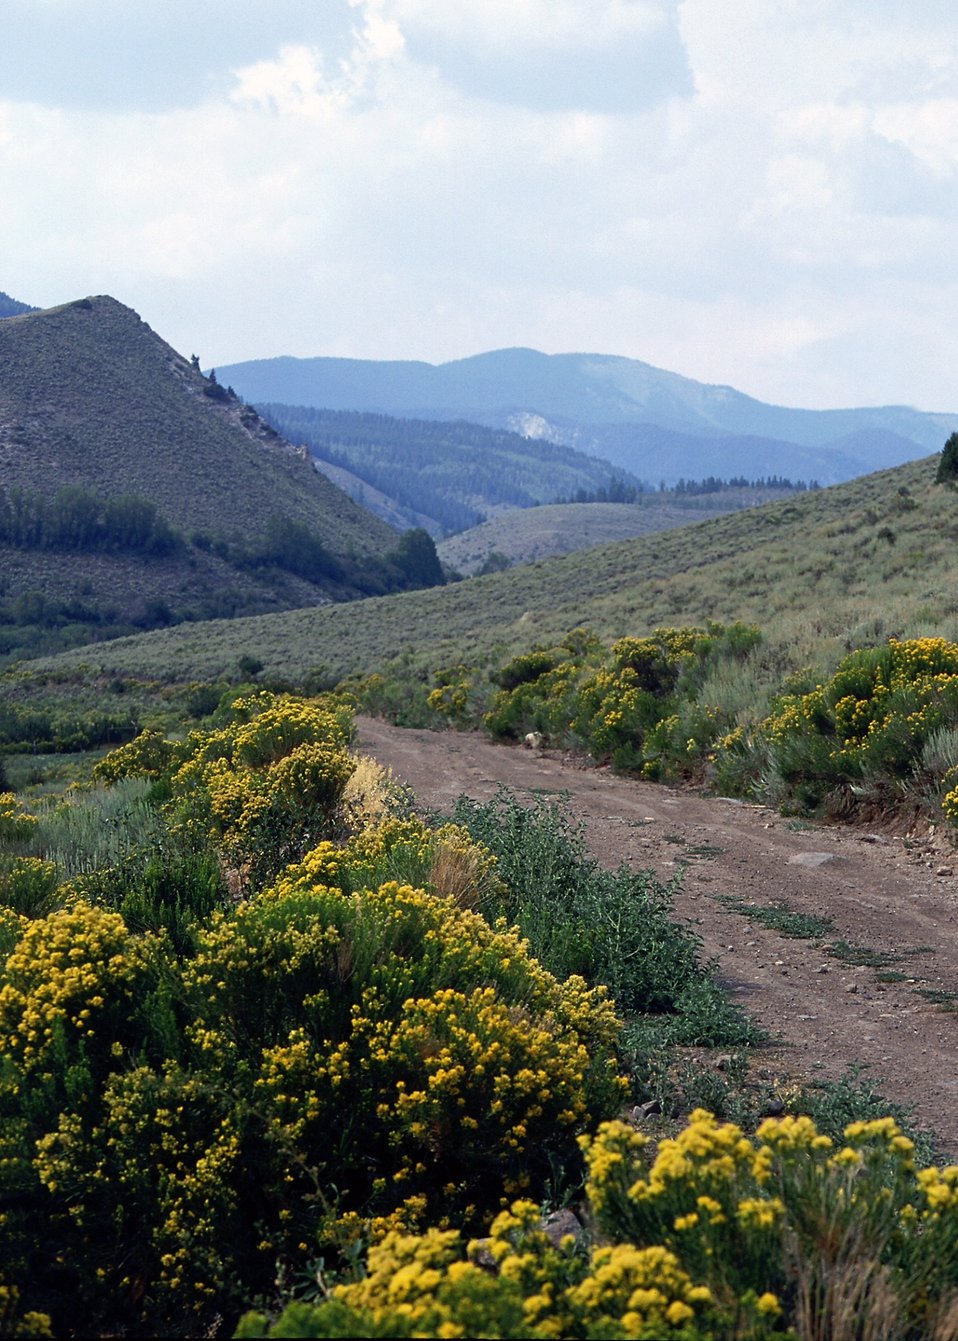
Scenic